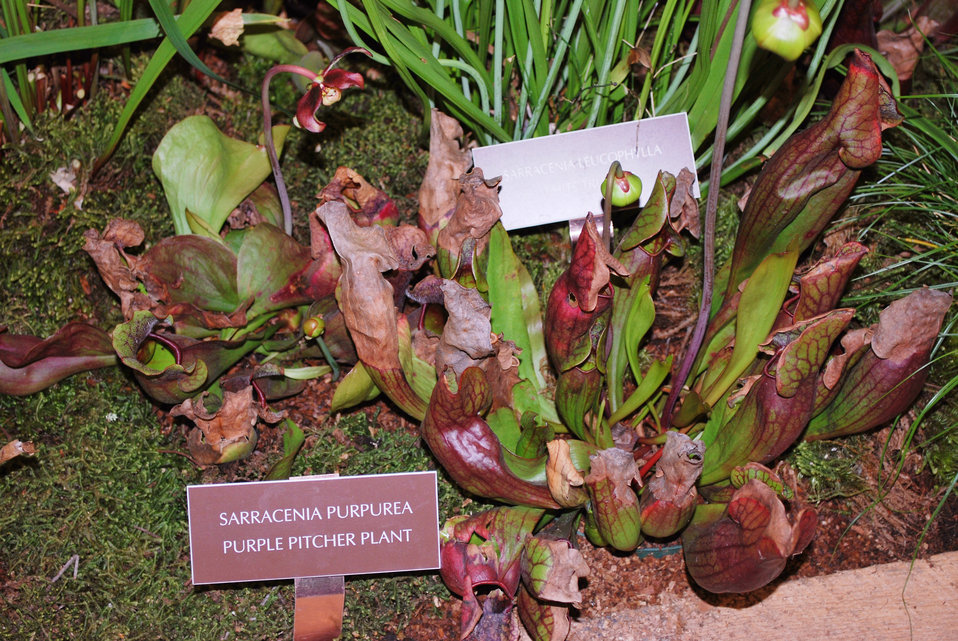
EPA's display at the Philadelphia Flower Show, 2014

Sarracenia purpurea, or purple pitcher plant, is a carnivorous plant adapted to growing conditions in bogs in the mid-Atlantic region. It was part of our exhibit at the 2014 Philadelphia Flower Show.